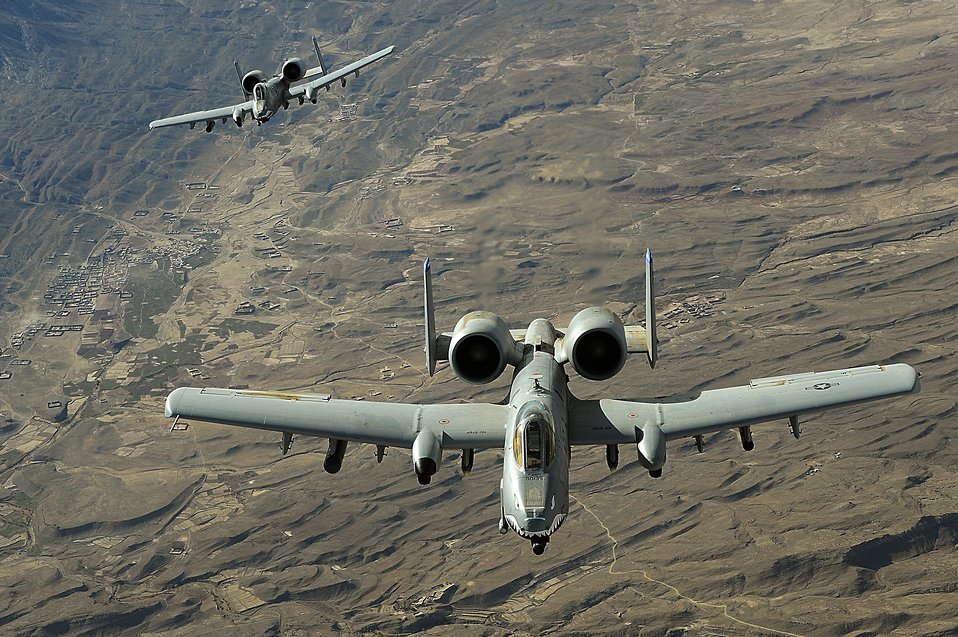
You can run, but you can't hide?

A two-ship A-10 Thunderbolt II formation flies a combat mission recently over Afghanistan. The A-10 has excellent maneuverability at low air speeds and altitude, and is a highly accurate weapons-delivery platform.